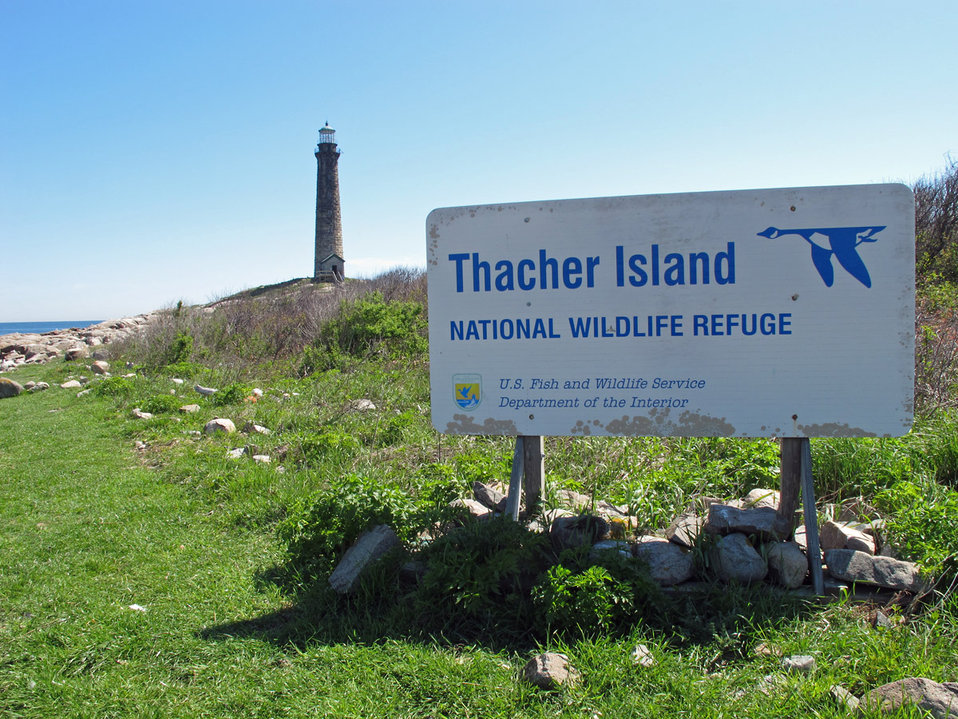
Thacher Island sign

Thacher Island National Wildlife Refuge, MA.